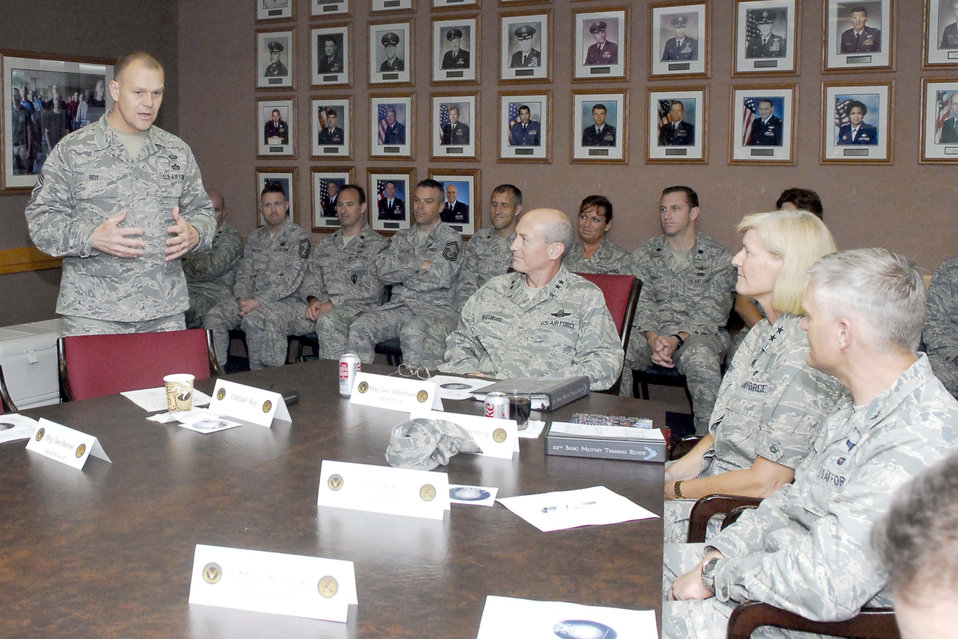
Review panel praises BMT

Chief Master Sergeant of the Air Force James A. Roy speaks to Air Education and Training Command leaders during the 22nd Basic Military Training Triennial Review outbrief May 14, 2010, at Lackland Air Force Base, Texas.